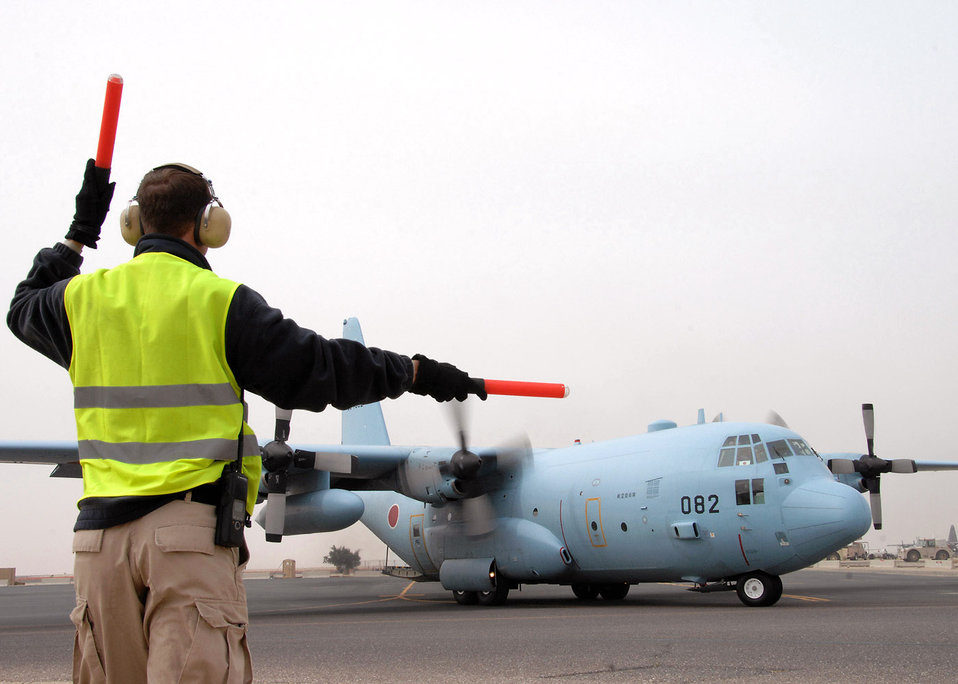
JASDF Redeplyoyment Group bids final farewell

Jeff Schiebout guides a Japanese Air Self Defense Force C-130 as they taxi to the runway for their flight home at an air base in Southwest Asia, Feb. 10. Since 2004 the JASDF have been providing airlift for the coalition forces and United Nations in support of Iraqi reconstruction efforts. Mr. Schiebout is assigned to the 386th Expeditionary Maintenance Squadron Transient Alert.